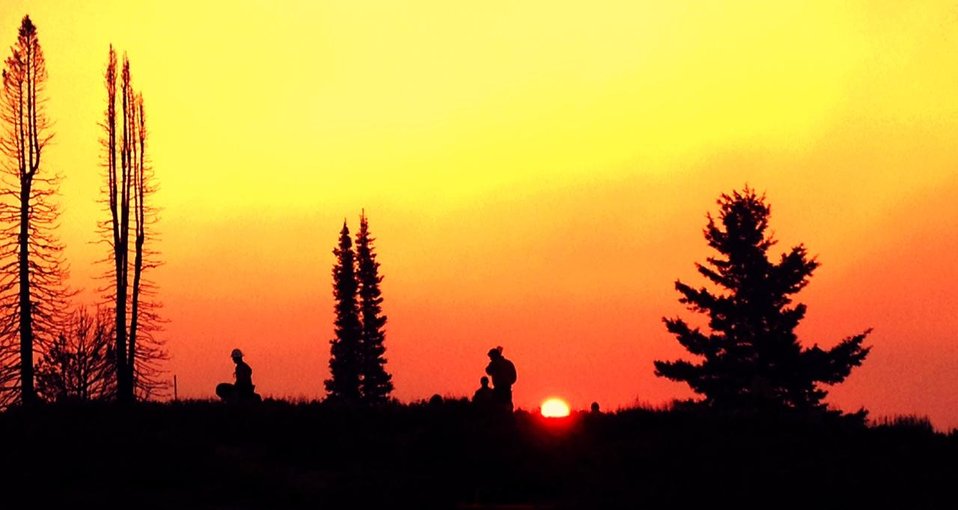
Firefighters start work as dawn breaks at the Ridge Fire. The Ridge Fire in the Boise National Forest, ID near Lowman, ID began on Jul. 16, 2013 by lightning and has consumed approximately 5, 263 acres. The Ridge Fire is approximately 38% contained.